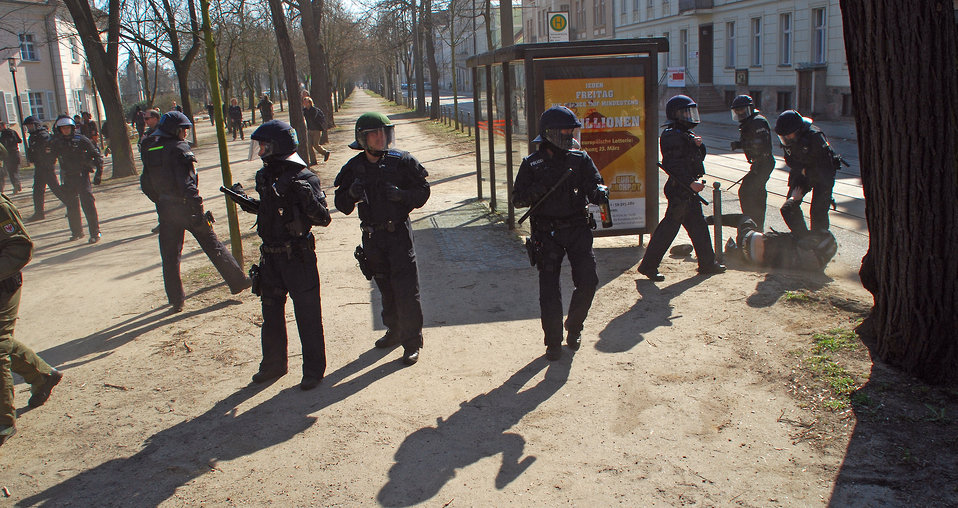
Proteste gegen den Nazi-Aufmarsch am 24.3.2012 in Frankfurt (Oder)